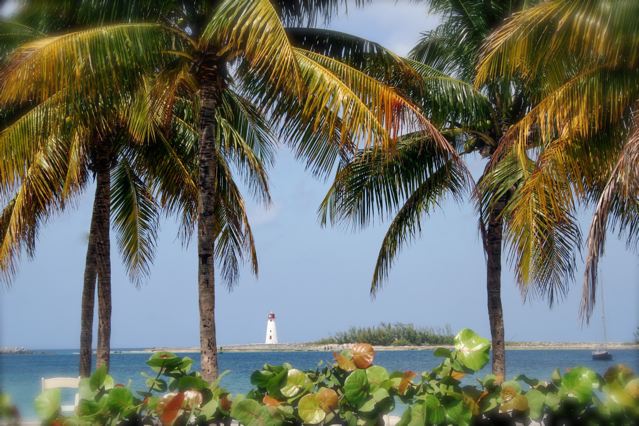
Uploaded by request of Kelly Wease Chenault.

Place photo was taken: Nassau, Bahamas

The weather was a perfect 80 degrees and the winds were slightly
breezy. It was so quiet and beautiful. How can anyone not marvel at
nature in this environment?!